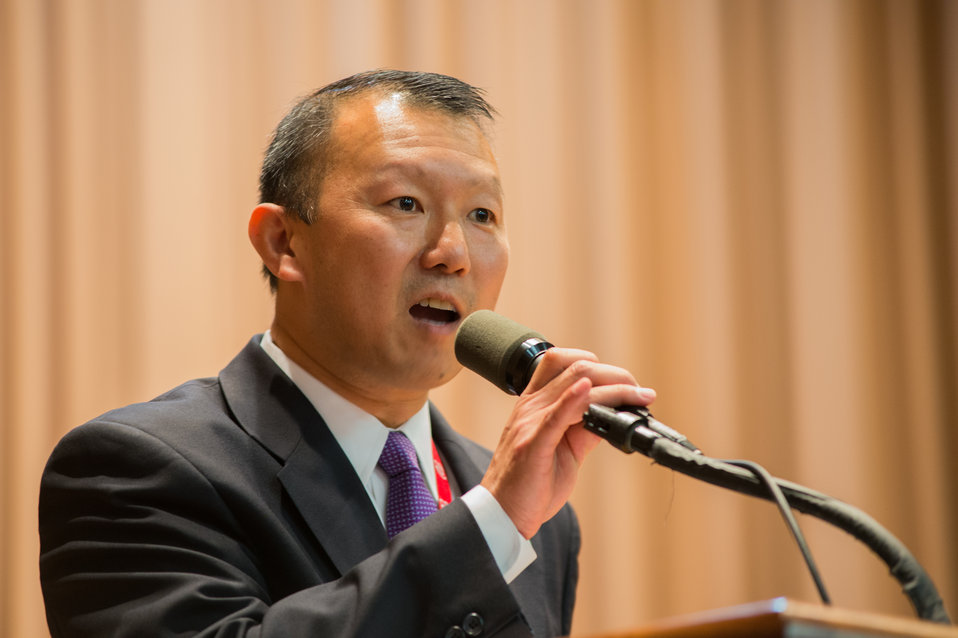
U.S. Department of Agriculture (USDA)Departmental Management Asian Pacific American Heritage representative Frederick Cheng introduces speakers and participants at the Asian Pacific American Heritage Observance at USDA in Washington, D.C. on Thursday, May 22, 2014. The theme of the event was, “Diverse Leadership and Expanding Opportunity: Am Imperative for America.”